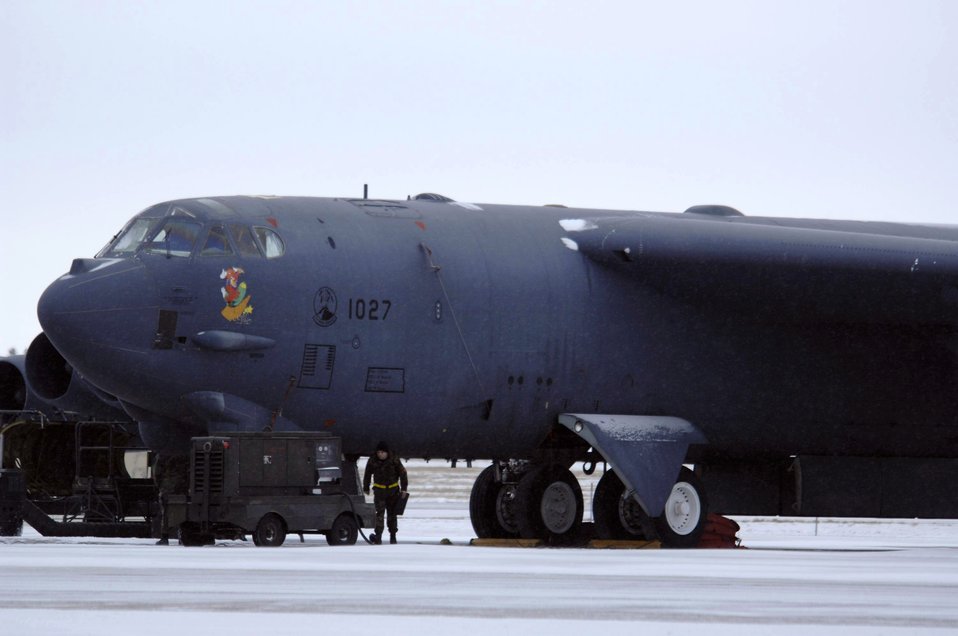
Enduring the cold

Airmen prepare a B-52H Stratofortress for flight Jan. 8 at Minot Air Force Base, N.D. They endured sub-zero temperatures and gusts of wind up to 50 mph. The Airmen are with the 5th Aircraft Maintenance Squadron.